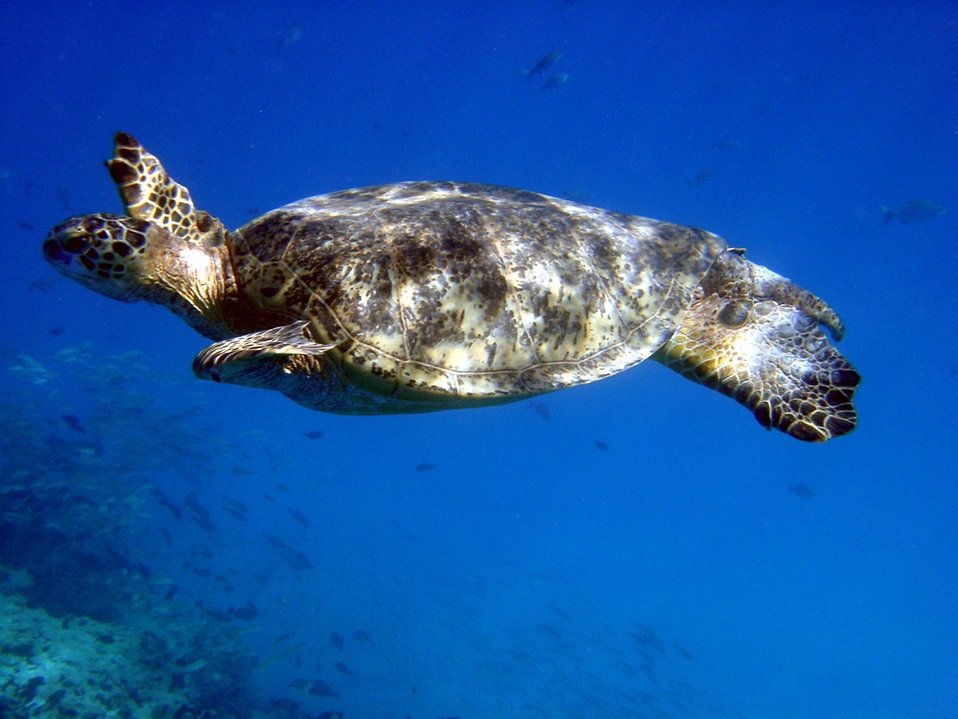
A green sea turtle (Chelonia mydas).